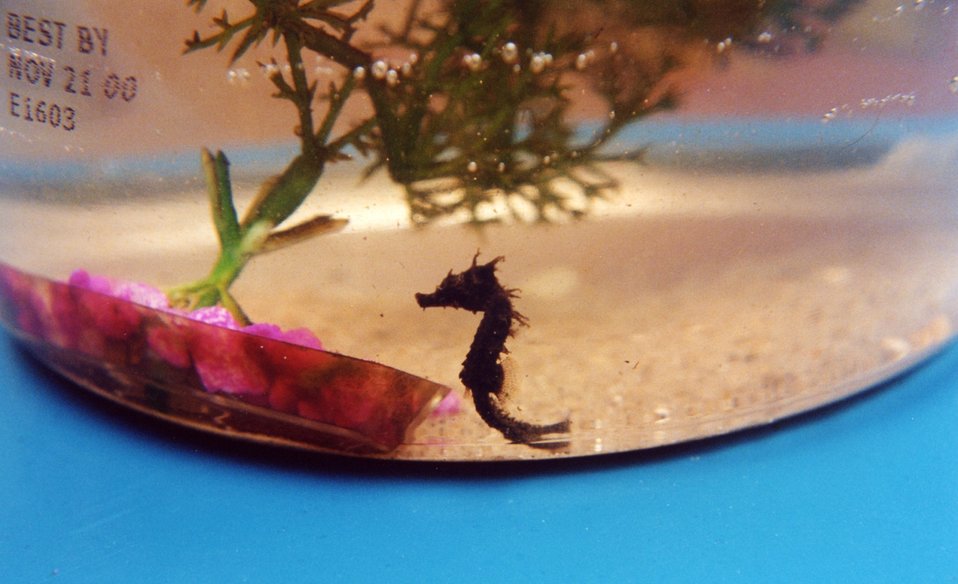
Young seahorse found in the Patuxent River.